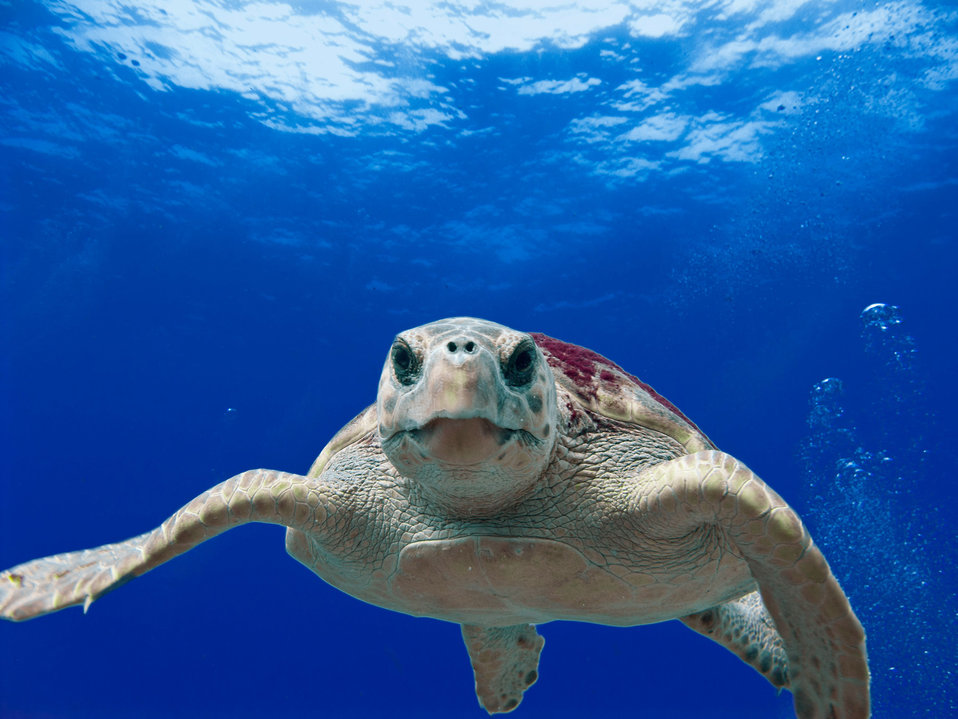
Loggerhead Turtle

Up close and personal with a loggerhead turtle (Caretta caretta) in the Gulf of Mexico's Flower Garden Banks National Marine Sanctuary (about 170 kilometers, or 100 miles, off the Louisiana coast).